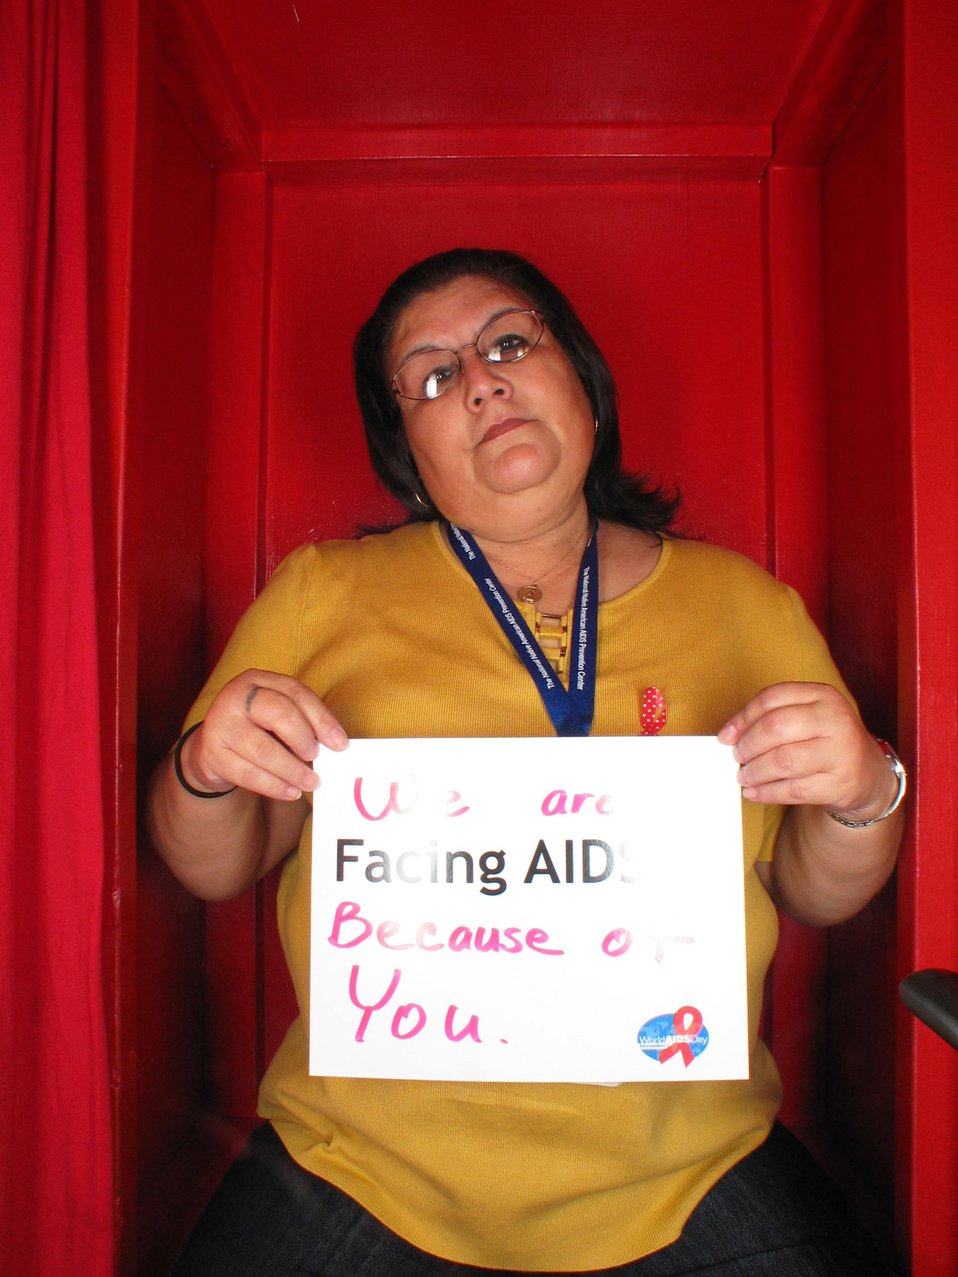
We are Facing AIDS because of you